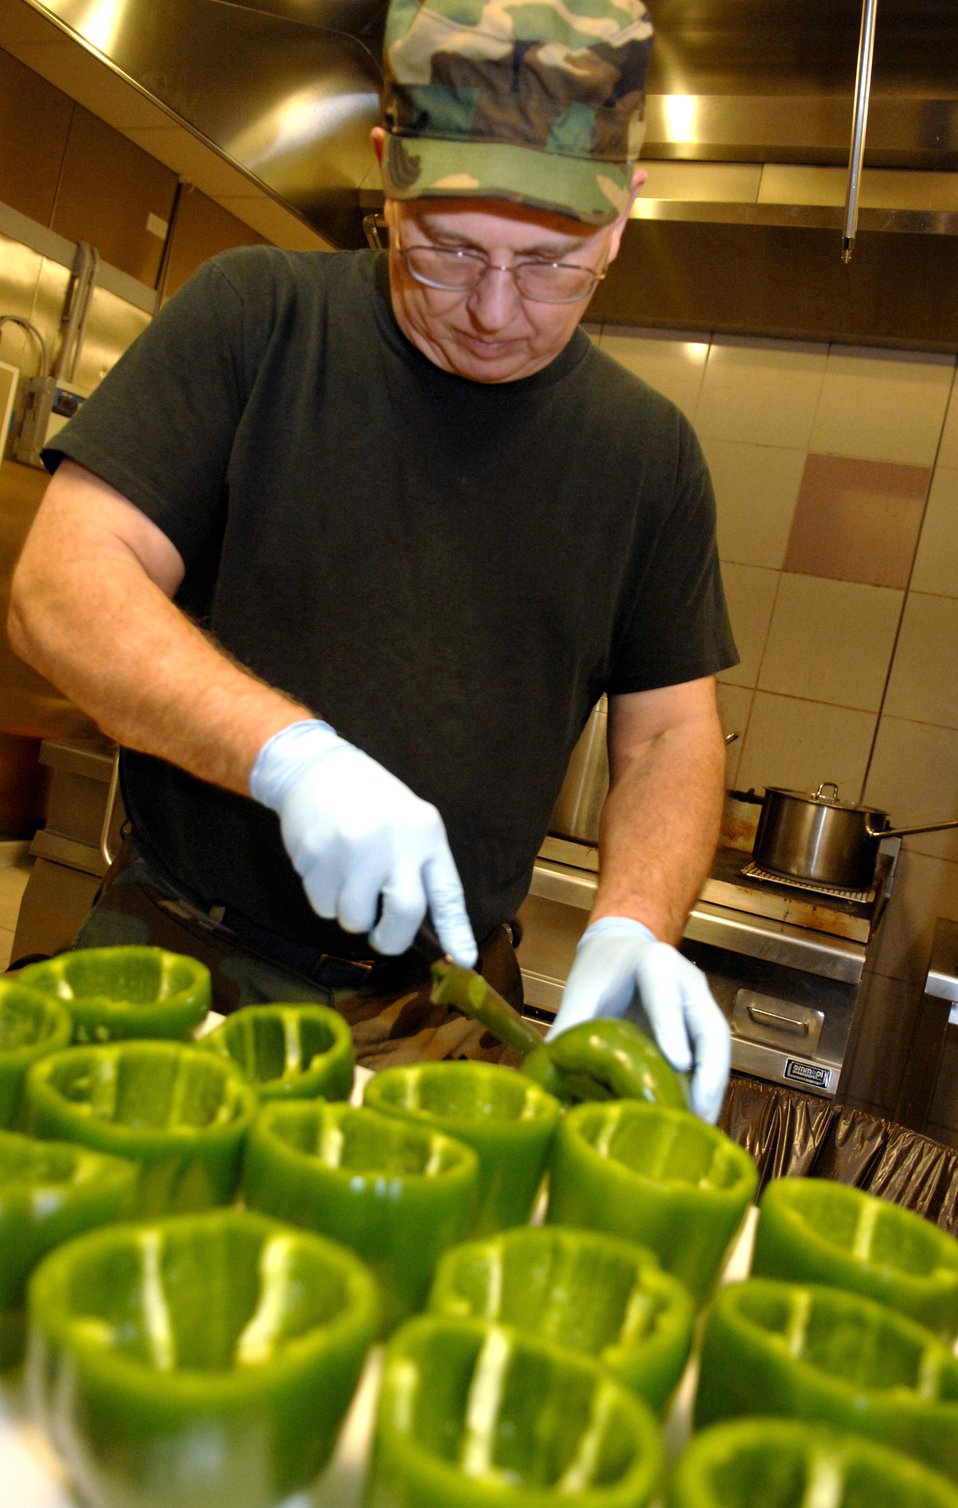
Serving Airmen

Staff Sgt. Bob Starkey prepares dinner at the La Dolce Vita Dining Facility Jan. 19 at Aviano Air Base, Italy. Base members at Aviano AB maintain two F-16 fighter squadrons to conduct regional and expeditionary operations under NATO, Supreme Allied Command Europe, or national tasking. Sergeant Starkey is deployed to Aviano AB from the 121st Fighter Wing at Great Falls, Mont.